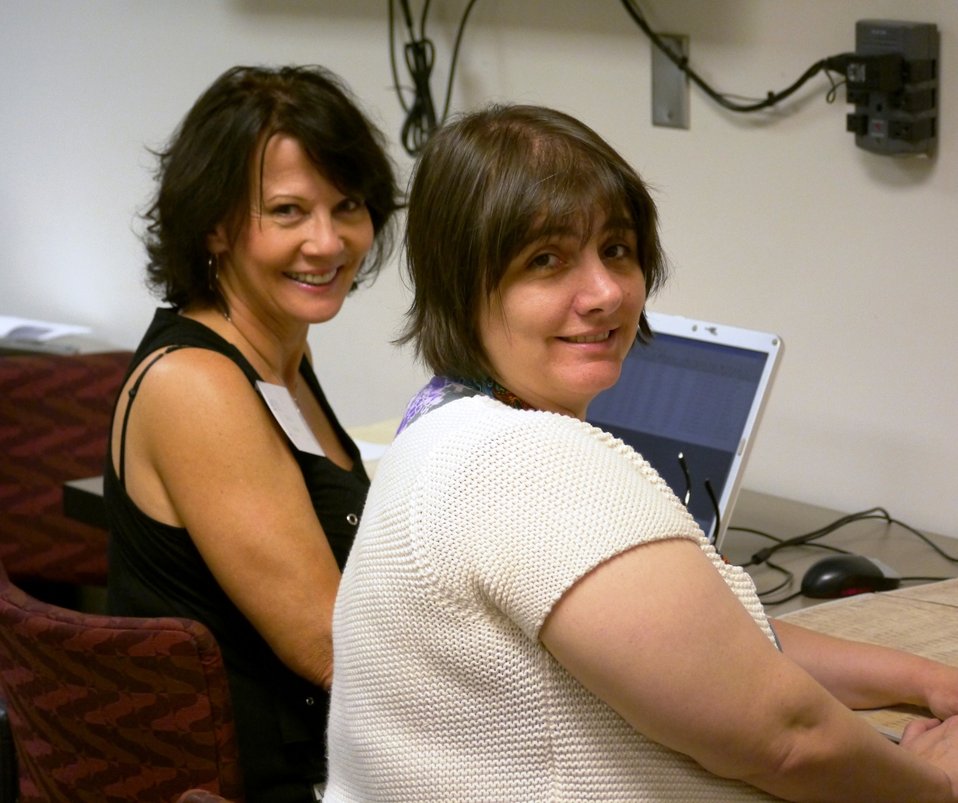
Vikki Burke (Citizen Archivist) and Ketina Taylor (Archivist) during the June 2014 Citizen Archivist event.; Location: John Burgess Facility, National Archives at Fort Worth, Fort Worth, TX